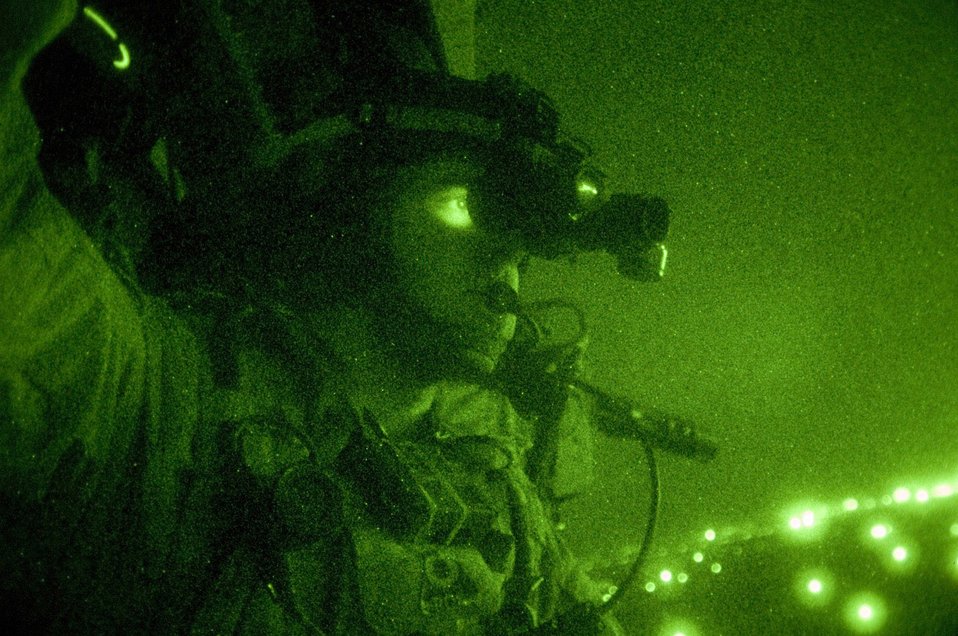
Pararescue Airmen mission ready for search, rescue

A pararescue jumper, equipped with night vision goggles, scans the Iraqi terrain during a combat search and rescue rehearsal mission Feb. 24 outside Balad Air Base, Iraq. He and his teammates use these rehearsal missions to stay proficient. They are assigned to the 64th Expeditionary Rescue Squadron.